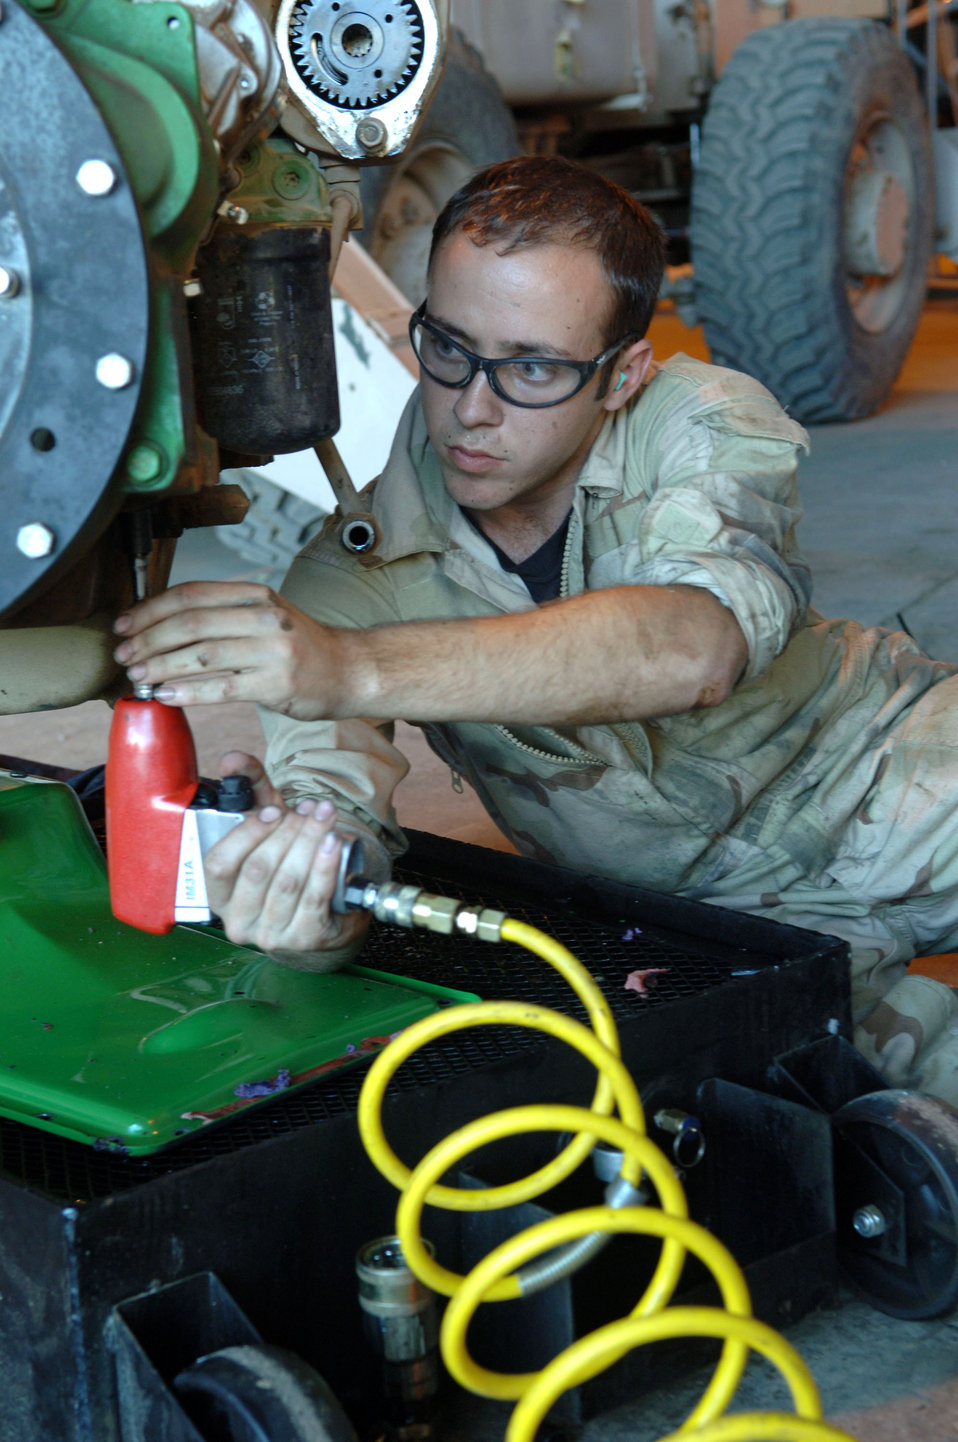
Balad vehicle maintenance

Staff Sgt. Matthew Muir, 332nd Expeditionary Logistics Readiness Sqadron, swaps out an oil pan in the maintenance shop at Balad Air Base, Iraq. Sergeant Muir is a vehicle maintenance journeyman deployed from Royal Air Force Lakenheath, England.